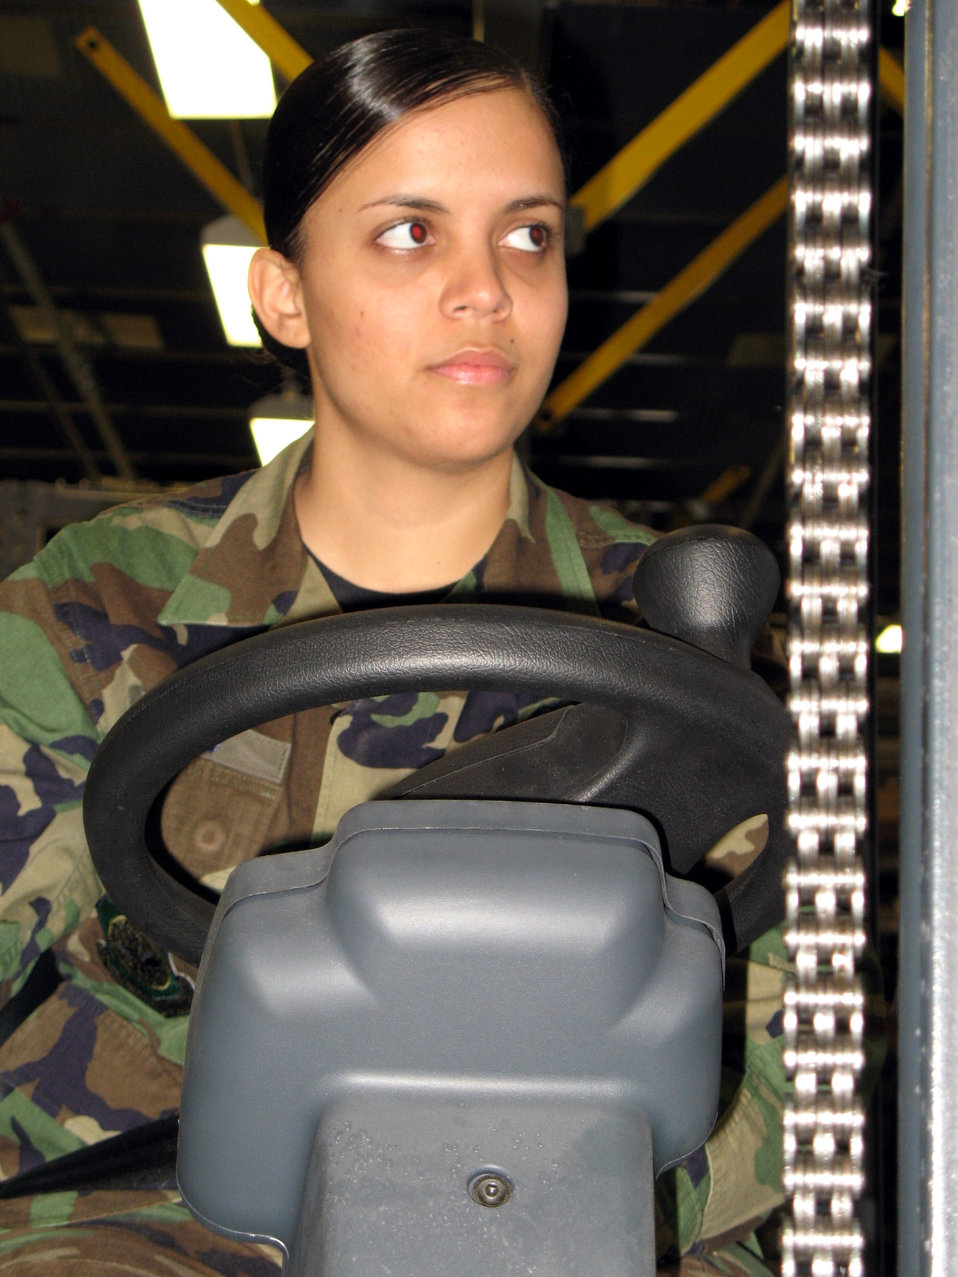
Serving through the season: Amn. Marilyn Torres

Airman Marilyn Torres operates a forklift at Spangdahlem Air Base, Germany, Dec. 8. As a supply apprentice, she trains to process aircraft parts and supplies for heavy aircraft assigned to the 726th Air Mobility Squadron. Her efforts ensure aircraft are mission-ready in support of the war on terrorism.